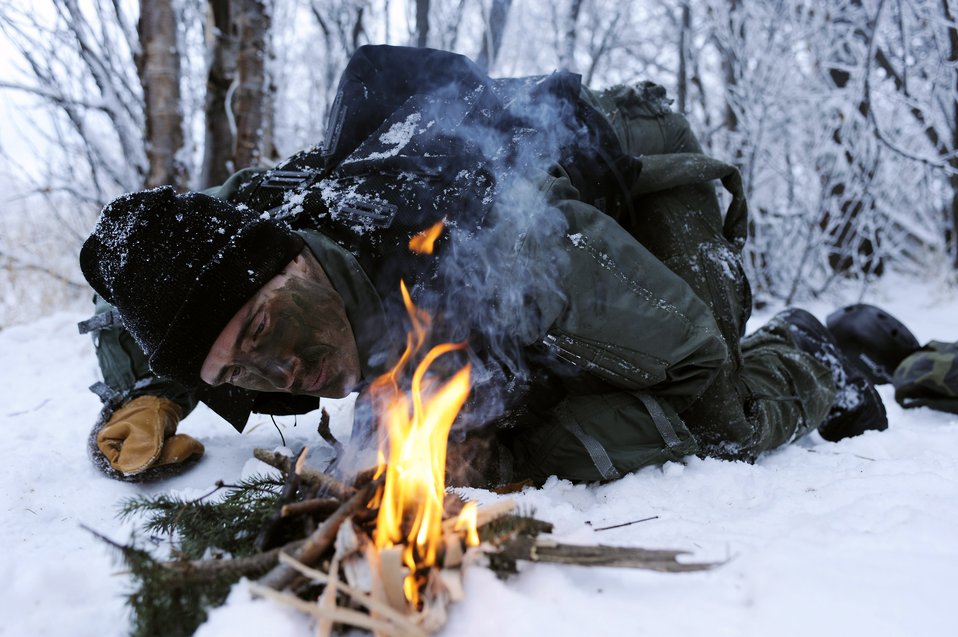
Keep on burning

1st Lt. Matthew Feeman builds a fire to prevent hypothermia during Red Flag-Alaska Oct. 14 at Eielson Air Force Base. Lieutenant Feeman is a